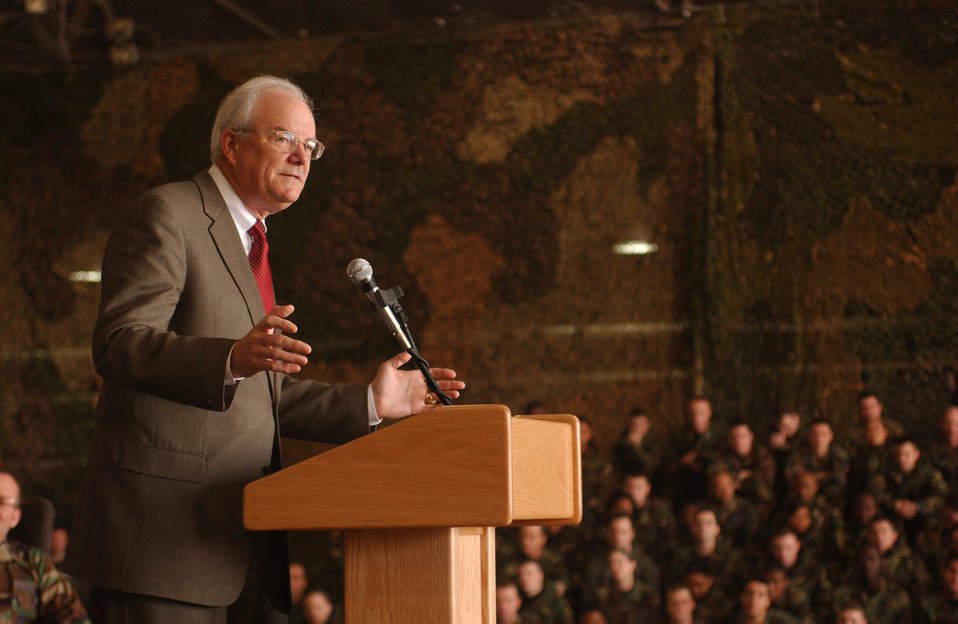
Secretary of the Air Force visits Korea

Secretary of the Air Force Michael W. Wynne speaks to Airmen Tuesday, March 21, 2006, during his visit to Osan Air Base, South Korea. Secretary Wynne is traveling through the Pacific Region visiting Airmen.